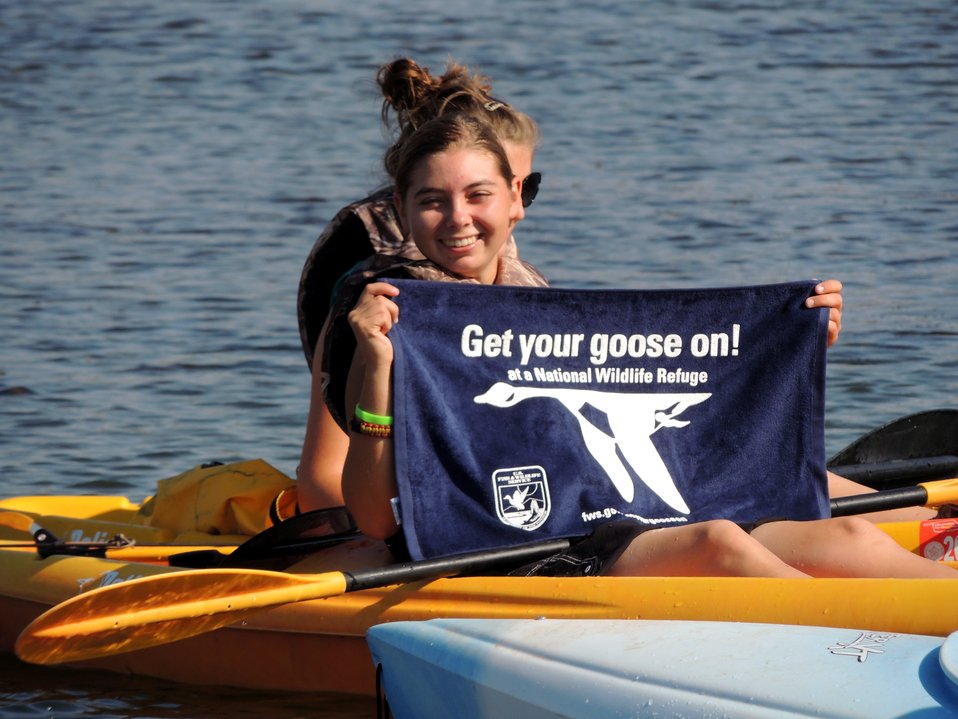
Get Your Goose On!

Wichita Mountains National Wildlife Refuge in Oklahoma.